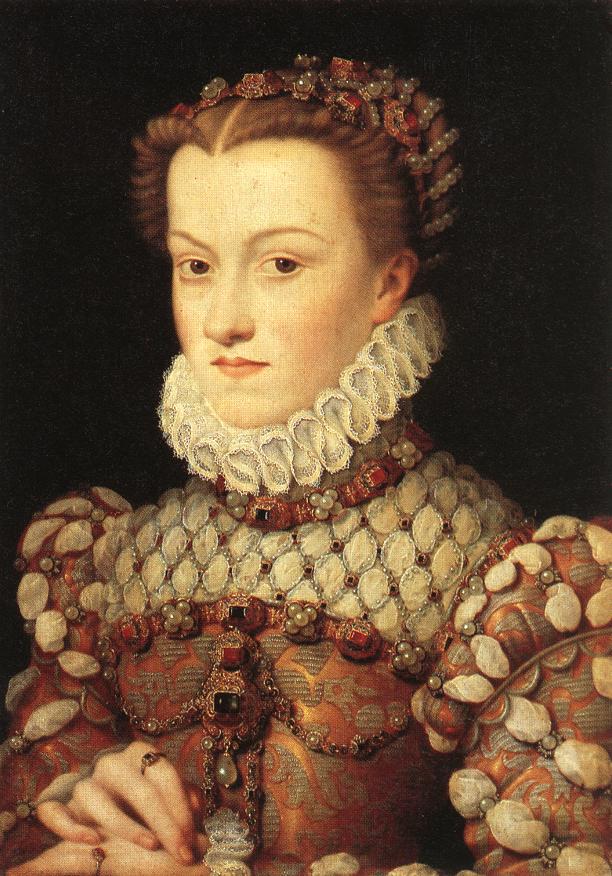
Elisabeth of Austria France